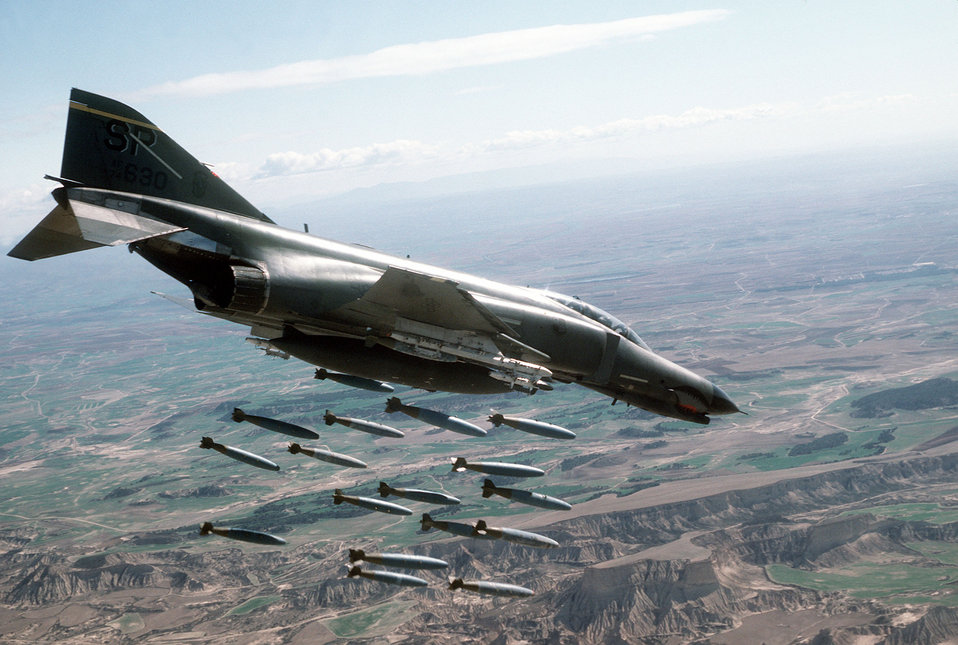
F-4E Phantom II

1990's -- An air-to-air right side view of an 81st Tactical Fighter Squadron F-4E Phantom II aircraft releasing 18 Mark-82 500-pound bombs over the Bardenas Reales Gunnery Range.